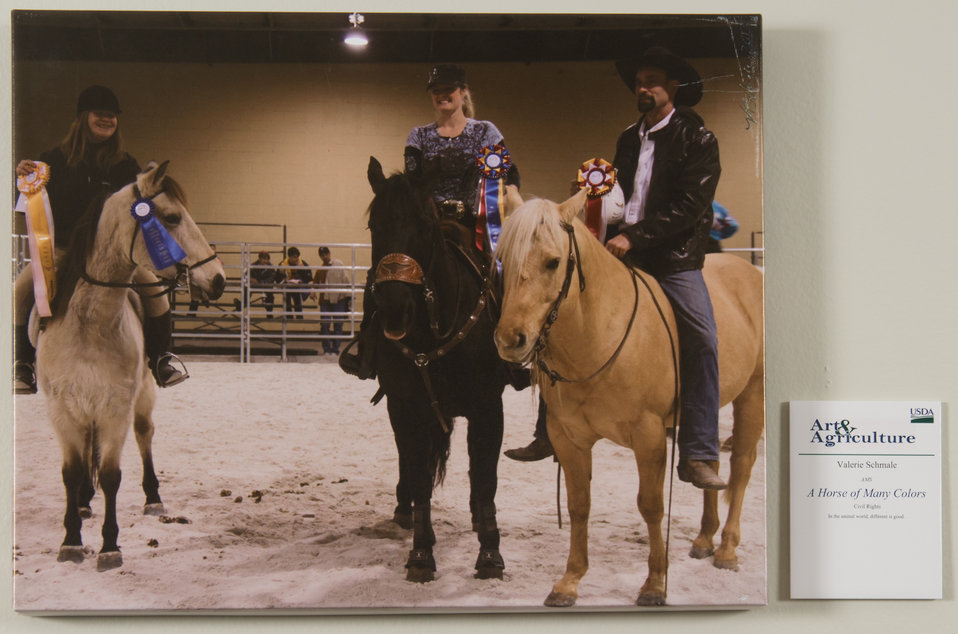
Online Viewer's Choice entries of the 2013 Art & Agriculture, Tuesday, July 9, 2013, in the South Building, Washington, D.C. Themes were expressed by employees from across the department and the contest was open to full-time and part-time USDA employees. Winning artwork will be displayed till the end of the year. U.S. Artistic expression is a creative outlet that is vital for an individual to grow and develop.